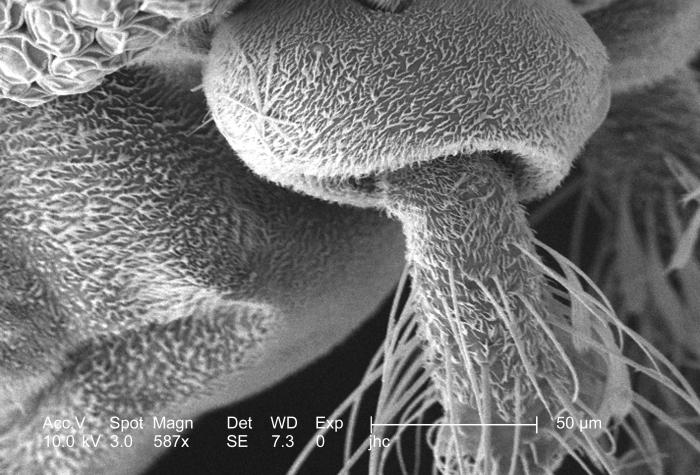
At a moderately high magnification of 587x, this scanning electron micrograph (SEM) revealed some of the morphologic features displayed on the exoskeletal surface of an Anopheles dirus mosquito. Highlighted in the field of view was the mosquito's right antennal pedicel as it attached to the head region at the "clypeus". Each antenna consists of three main sections: the pedicel, which attaches the antennae to the clypeus, the "scape", or mid-region between the pedicel and the last region, or "flagellum", which is the composed of varying numbers of smaller segments.